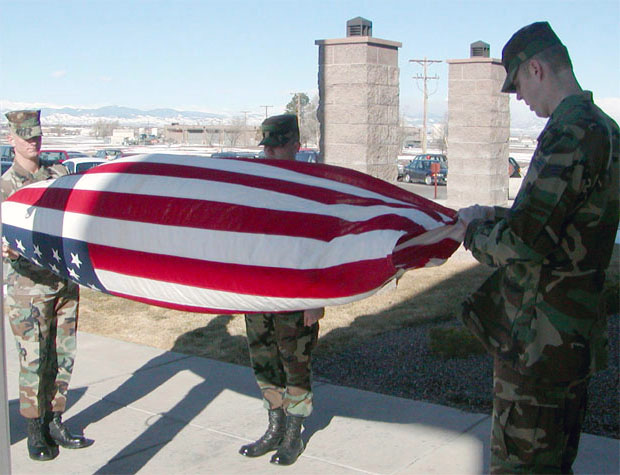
Folding history

BUCKLEY AIR FORCE BASE, Colo. -- Marine Cpl. Kevin Ennet and Senior Airmen Michael Skaggs and John Stacy fold an American flag after flying it on the flagpole here. In 1968, the flag was lowered on Mount Suribachi on the island of Iwo Jima for the last time as the island returned to the Japanese government.